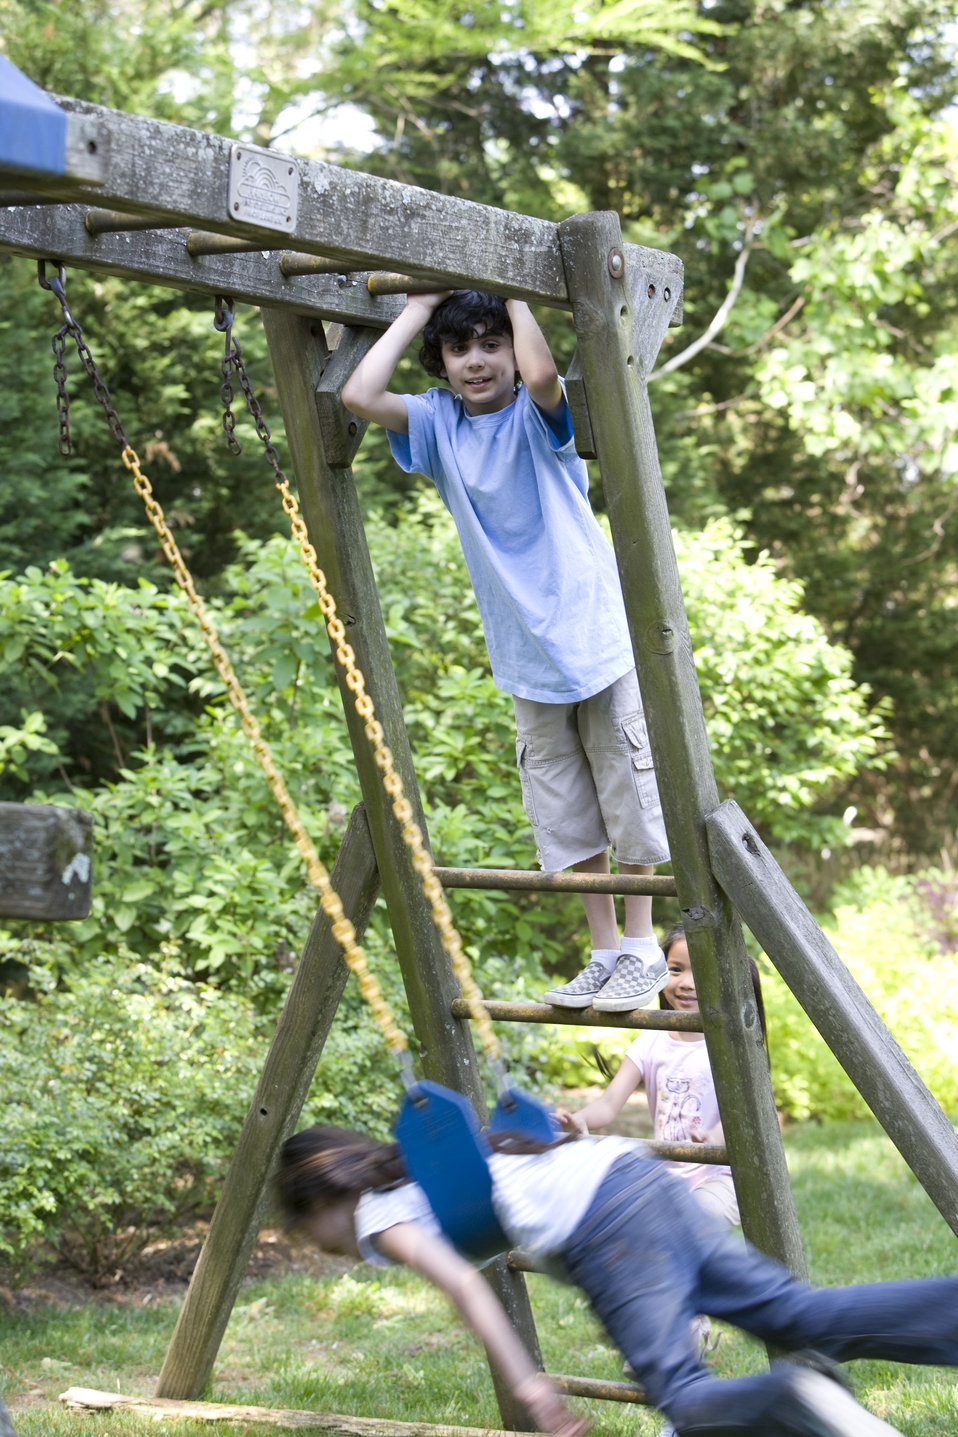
Children love playing outside, and these children were thoroughly enjoying their wooden swing set, and all were having fun in the fresh outdoor air, and the beautiful weather. It's important to note that older wooden playsets may have been treated with arsenic and/or creosote, and therefore, parents need to know if these chemicals were used in their manufacture.